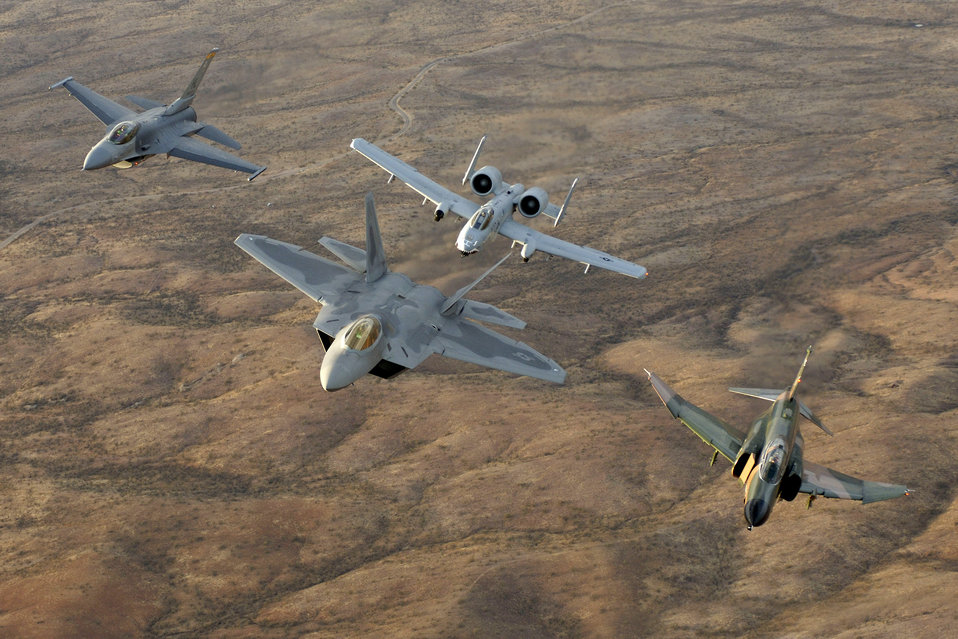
Heritage flight

An F-22A Raptor from Langley Air Force Base, Va., an F-4 Phantom from Holloman Air Force Base, N.M., an F-16 Fighting Falcon and an A-10 Thunderbolt II fly in diamond formation over Tucson, Ariz., Sunday, March 5, 2006, during the Air Combat Command Heritage Conference at Davis-Monthan Air Force Base. Lt. Col. Michael Shower flew the F-22A and Lt. Col. Charles Hainline flew the F-4. Capt. Dax Cornelius, a member of the West Coast Demonstration Team, flew the F-16, and Capt. Jeff Yost of the East Coast Demonstration Team flew the A-10.